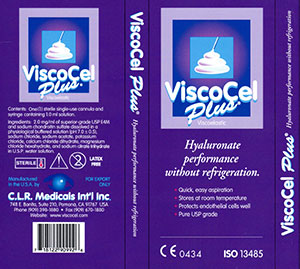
Viscocel-Plus-Artworkweb